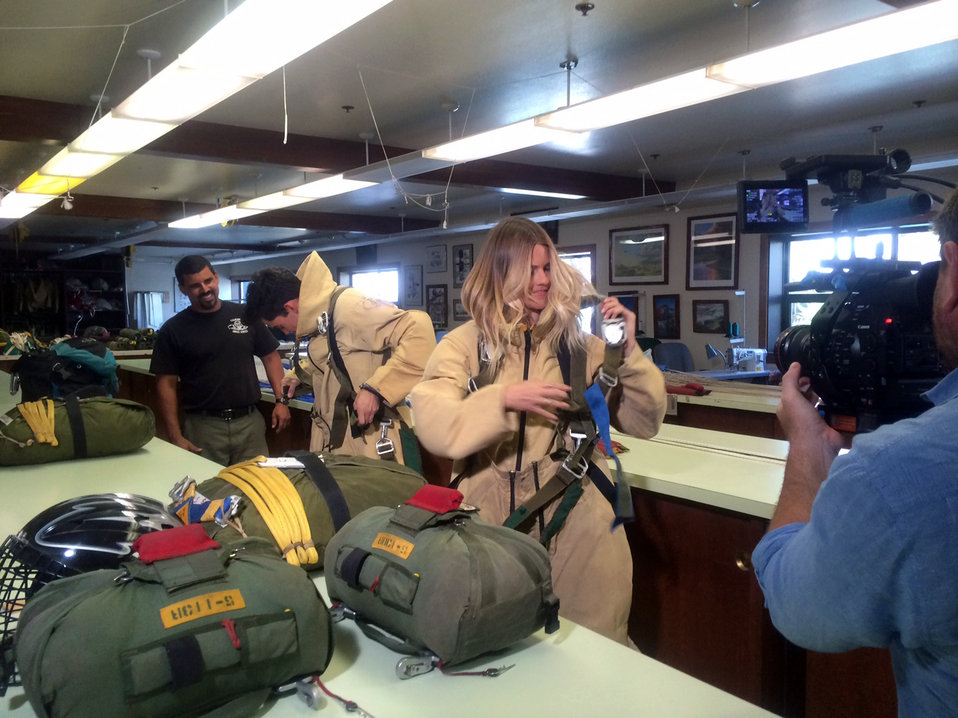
Planes Surfers

Luis Gomez watches as Disney Channel’s “Movie Surfers” Golan Yosef and Taryn Brooks try their luck at suiting up in full smokejumper gear within two minutes of getting the call to mobilize. The exercise is part of a Disney Studios behind-the-scenes look at wildland firefighting.